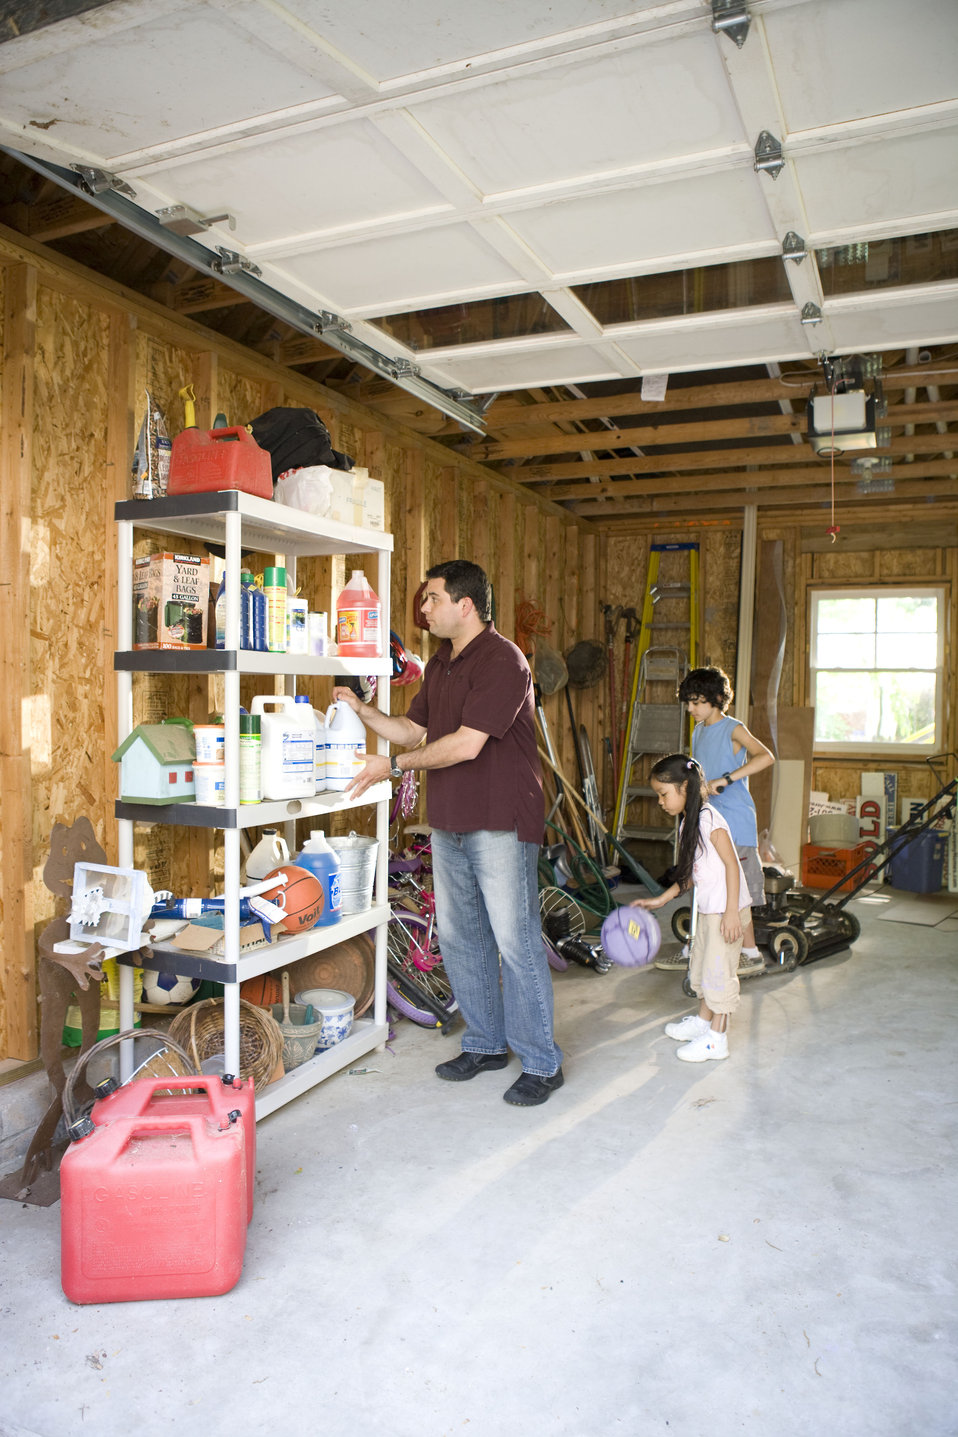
Here we see a father organizing his garage contents, while two of his children entertained themselves with some of the playthings stored inside.